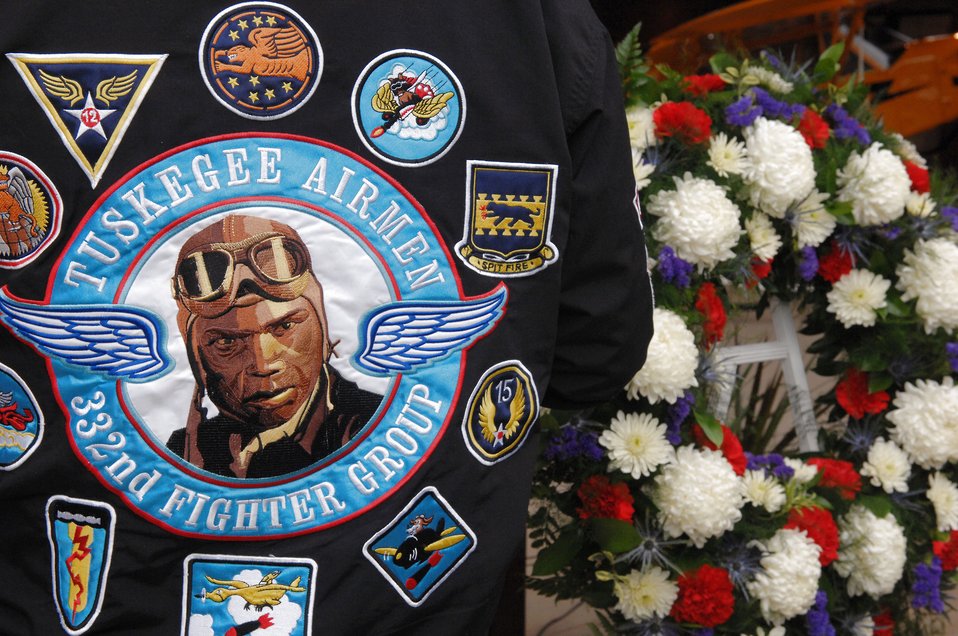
Airmen remembered

On Oct. 11, the grand opening for the Tuskegee Airmen National Historic Site was held at Moton Field in Tuskegee, Ala. The field was the only flight training facility in the 1940s for the first African-American pilot candidates in the Army Air Corps, earning the name Tuskegee Airmen.